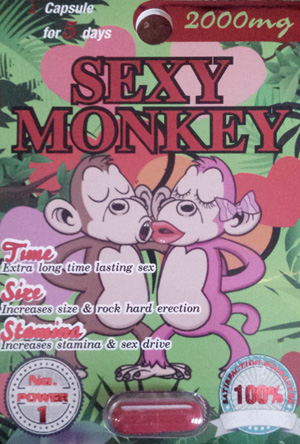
RECALLED – Dietary Supplement for Sexual Enhancement

January 9, 2014 – Product Recall – Midwest Wholesale Issues Voluntary Recall of Boost Ultra, XZone Gold, Sexy Monkey, Triple MiracleZen Platinum, Magic for Men, 'New' Extenze, and New XZen Platinum Marketed as a Dietary Supplements Due to the Presence of Undeclared Drug Ingredients. For additional information, please refer to the company issued press release available on FDA’s web site at www.fda.gov/Safety/Recalls/UCM381299.

And read this Consumer Update: Beware of Fraudulent ‘Dietary Supplements’